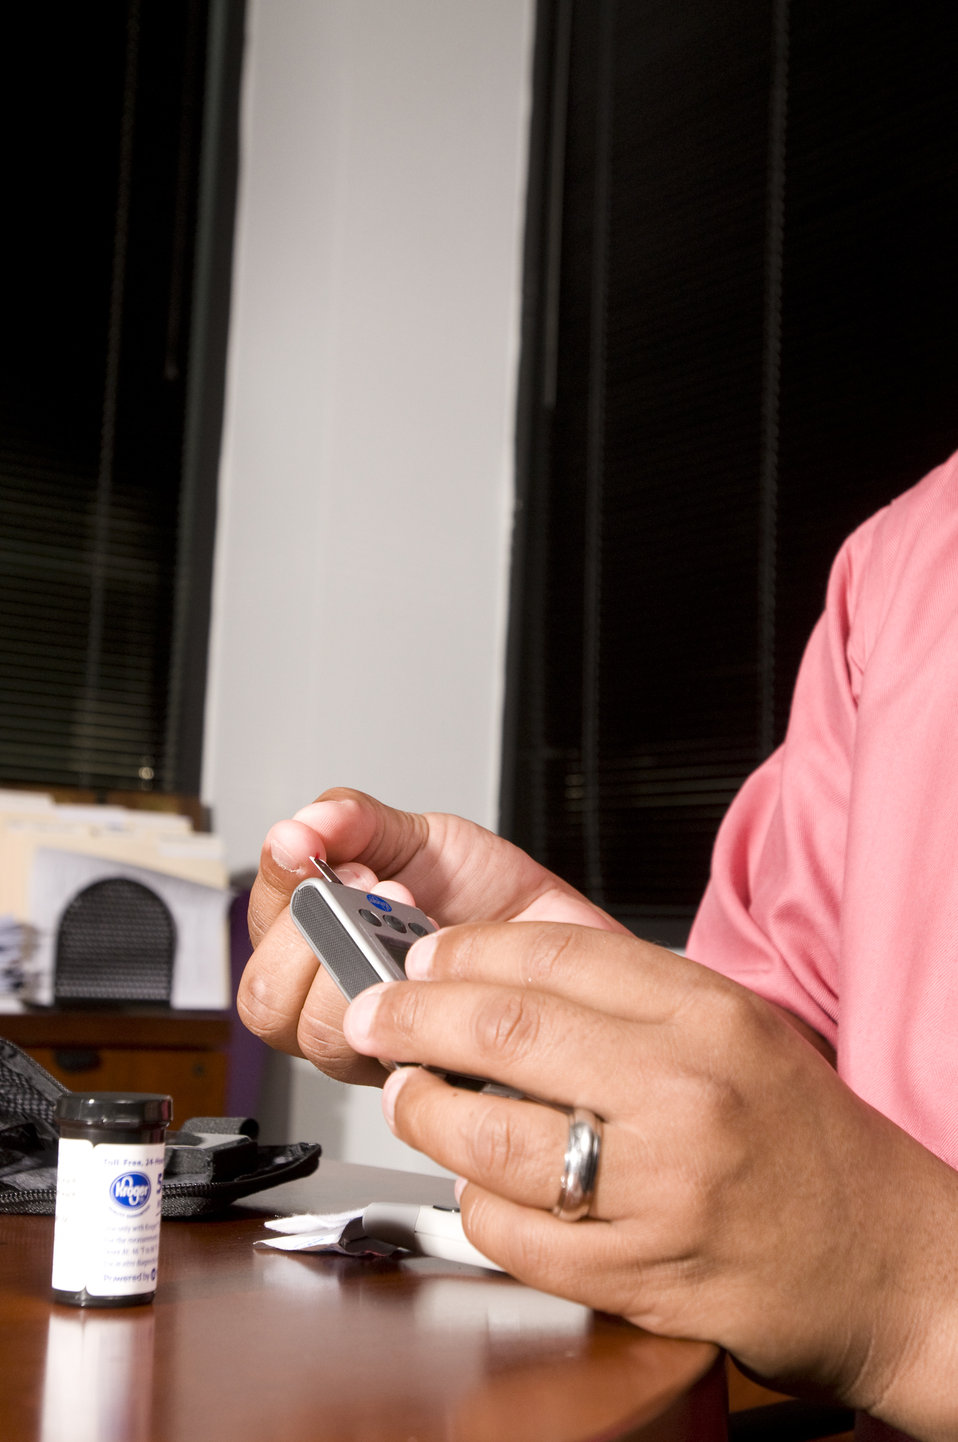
The man pictured here, was about to check his blood glucose level. This process is known as self-monitoring blood glucose, and it's a way for people with diabetes to find out how much glucose is in their blood. A drop of blood from the fingertip is placed on a special coated strip of paper that 'reads' the amount of glucose in the blood. Many people use an electronic meter to get this reading. This stage of the procedure now required this patient to read his blood glucose level using an electronic glucose meter, which draws the blood up and into the device.